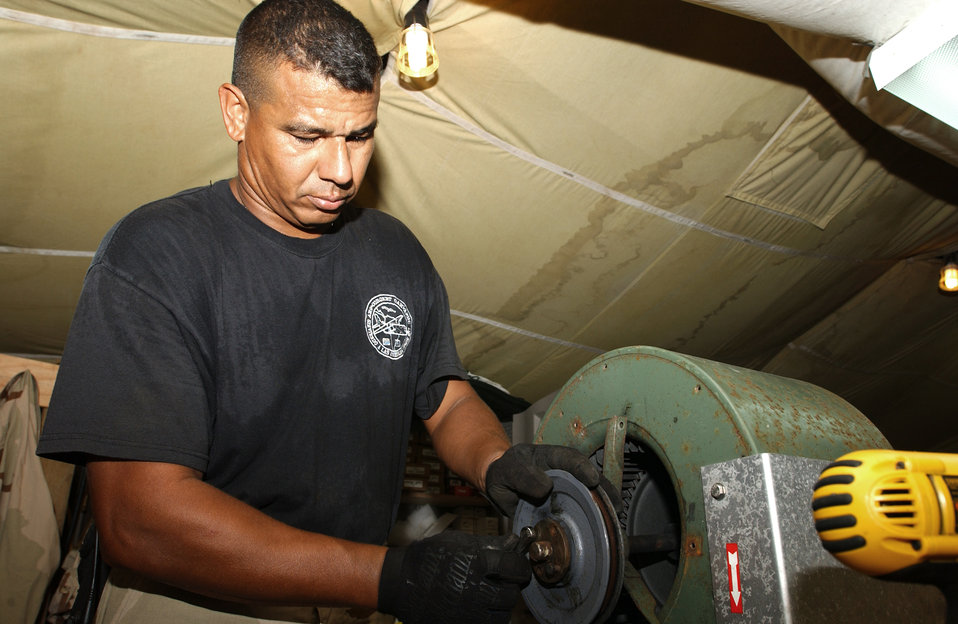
Guardsmen tackle challenges of keeping their cool

OPERATION ENDURING FREEDOM -- Master Sgt. Alex Gonzalez repairs an environmental control unit used to cool tents at a forward-deployed location. He is the 40th Expeditionary Civil Engineer Squadron's heating, ventilation, air conditioning and refrigeration flight superintendent and is deployed from Muniz Air National Guard Base, Puerto Rico.